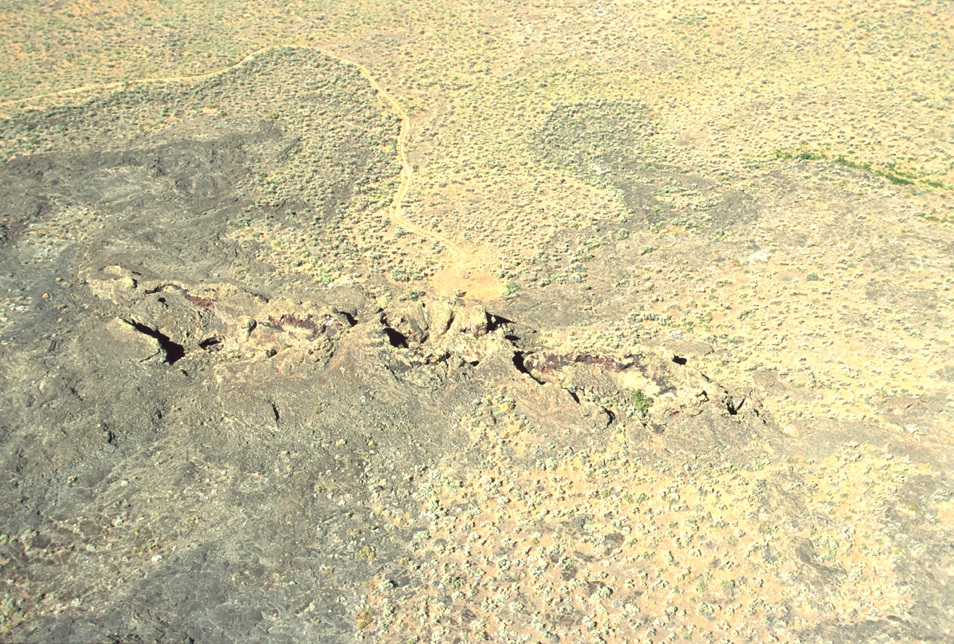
Shoshone Field Office USRD Upper Snake River District